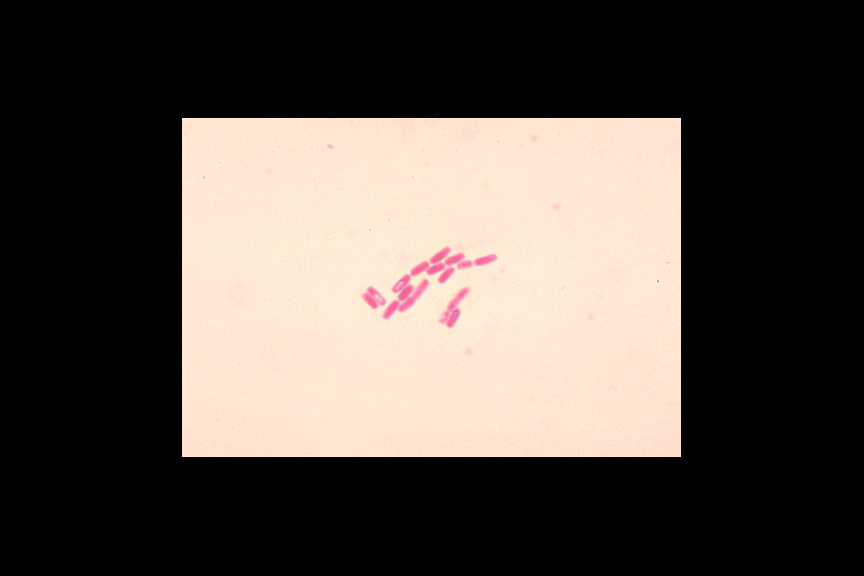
Bacillus cereus. Gram stain.